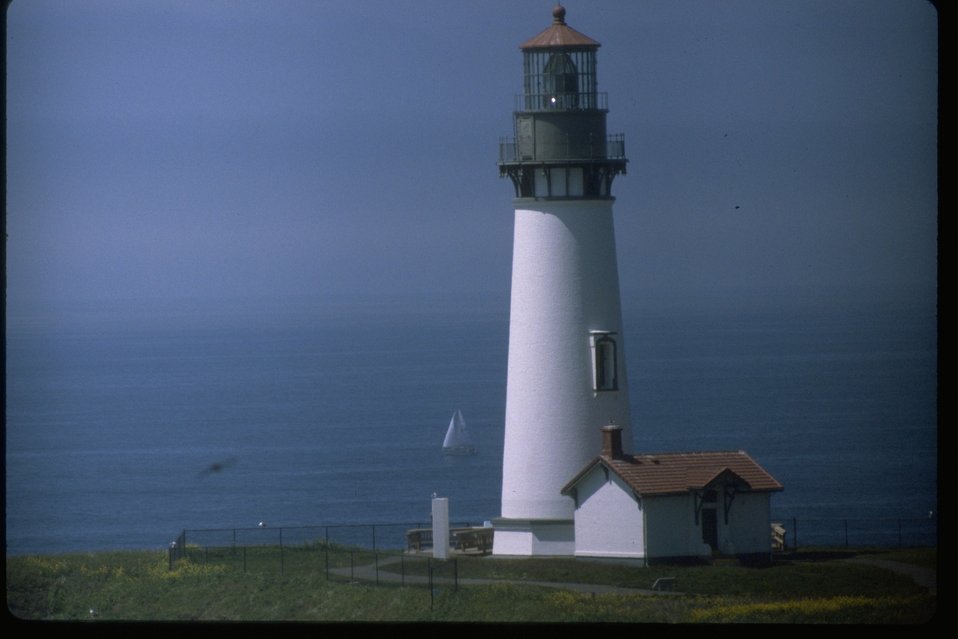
Horizontal shot of Yaquina Head lighthouse with a sailboat off shore.